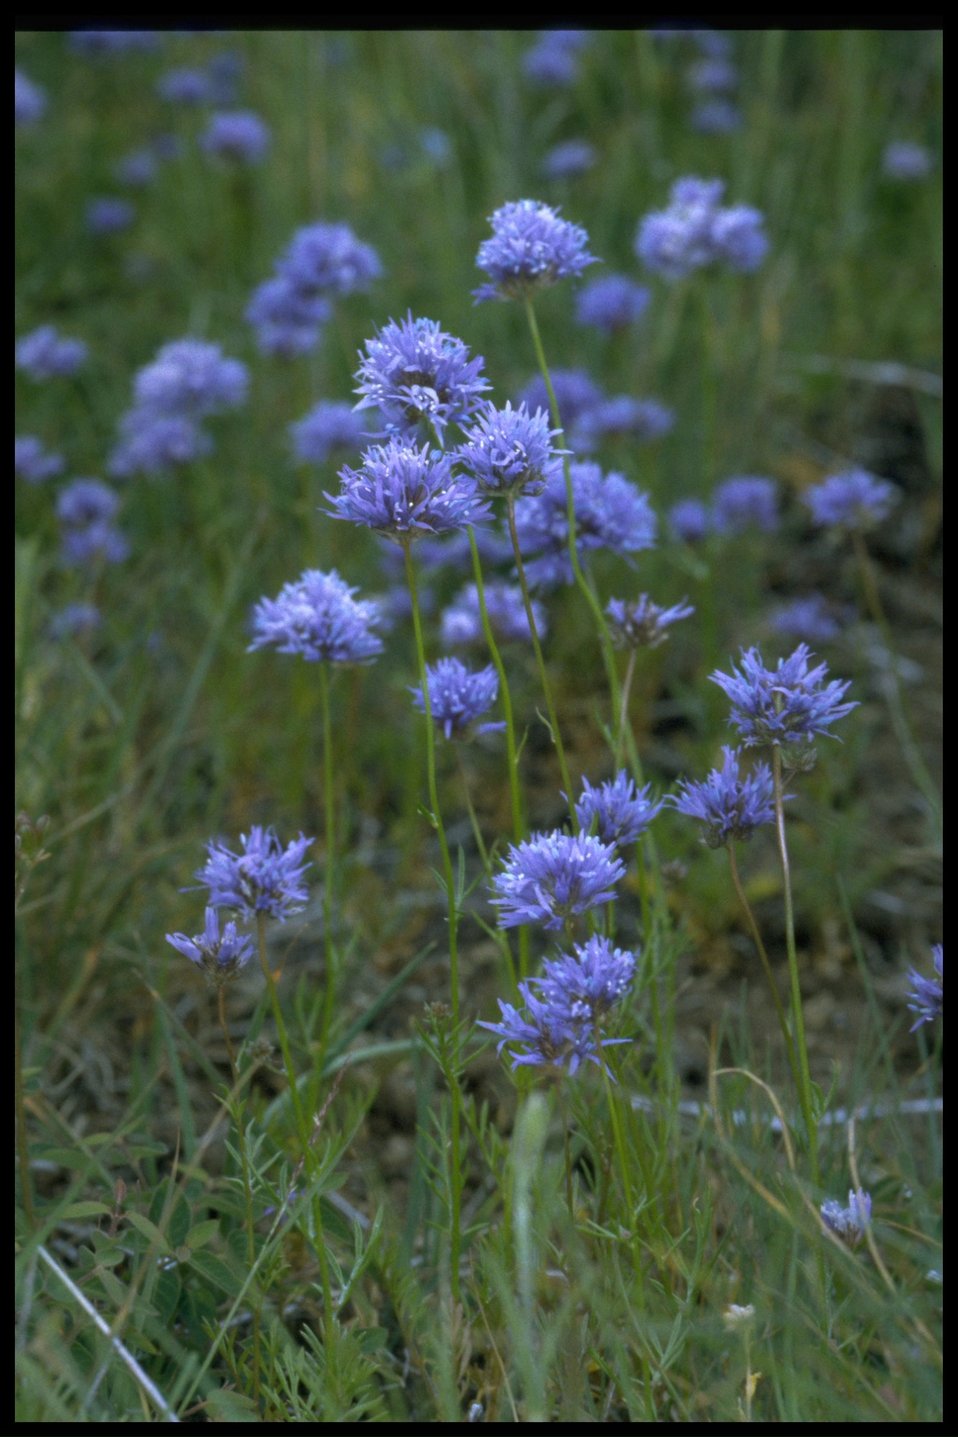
Medium shot of Filia (Ipomopsis) Capitata.